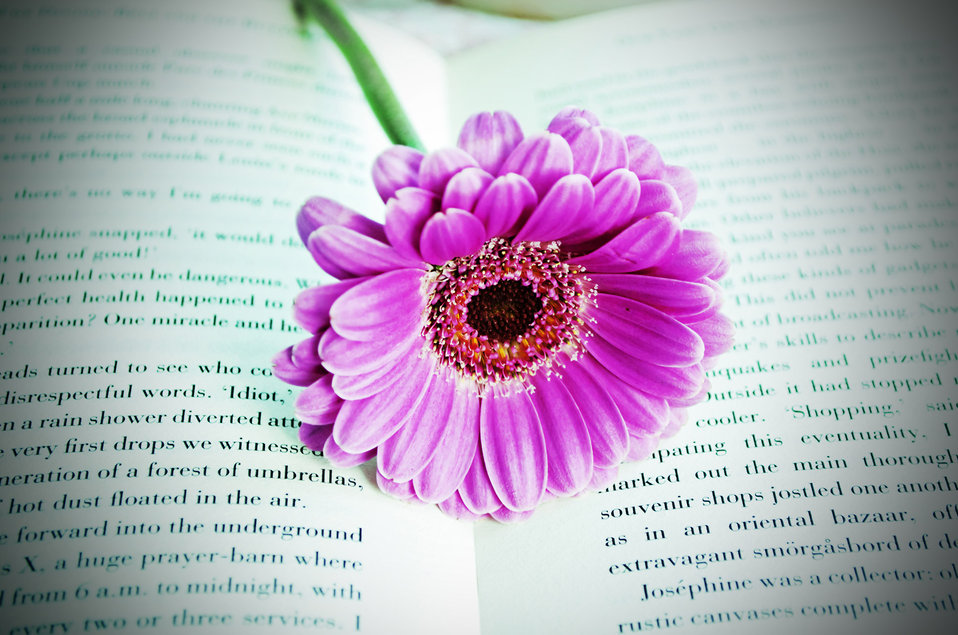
Flower on the book.